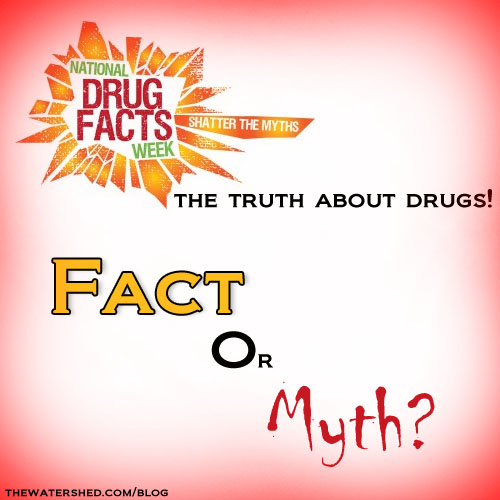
drugfacts-week watershed-blog-02-01-13

Palm Beach County, Fl. NDFW Events 2013